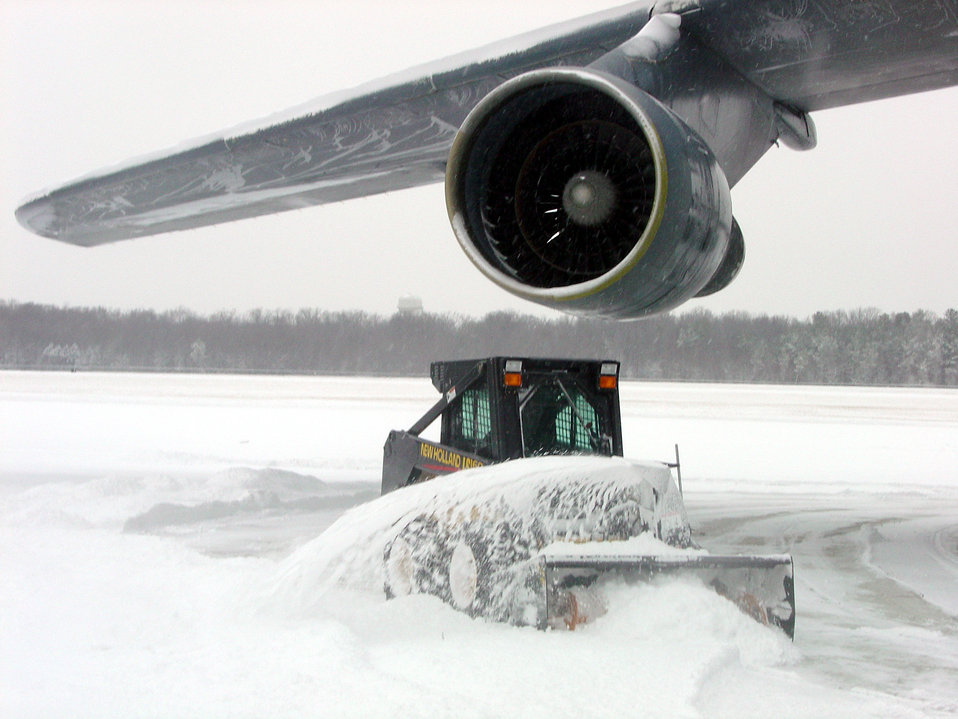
Snowy night

DOVER AIR FORCE BASE, Del. -- A member of the 436th Aircraft Maintenance Squadron here clears snow around a C-5 Galaxy early Jan. 26. Five inches of snow fell overnight, and freezing rain followed by more snow is expected over the next 24 hours.